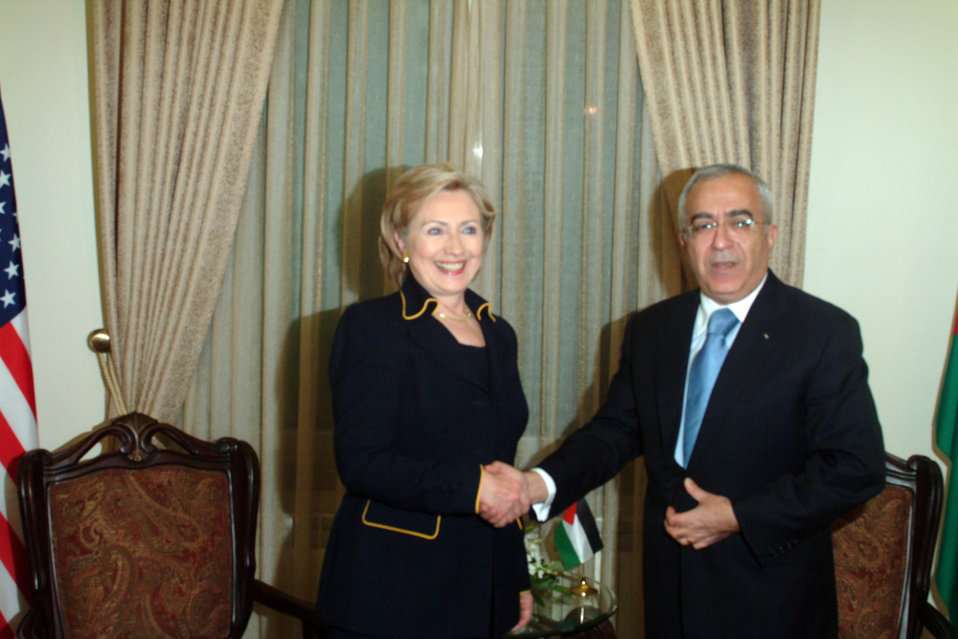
Secretary Clinton With Palestinian Authority Prime Minister

U.S. Secretary of State Hillary Rodham Clinton with Palestinian Authority Prime Minister Salam Fayad in Ramallah March 4, 2009.